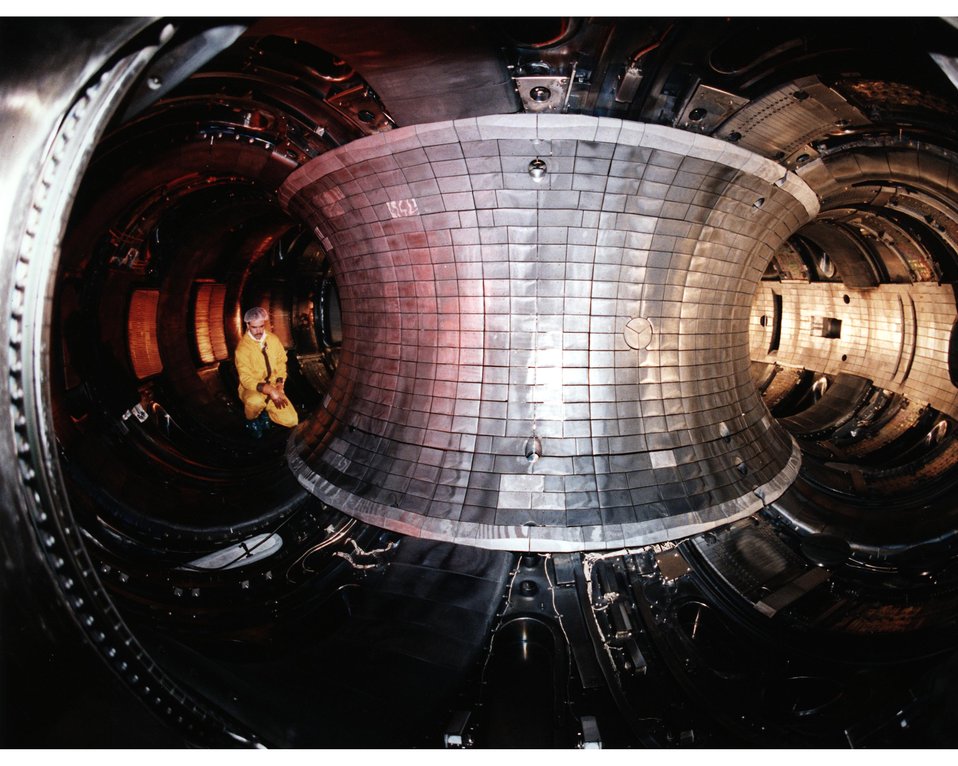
THE TOKAMAK FUSION TEST REACTOR (TFTR).

TFTR WILL BE 1ST FUSION EXPERIMENT TO USE TRITIUM, RADIO- ACTIVE ISOTOPE OF HYDROGEN. TRITIUM WILL BE STORED IN SOLID FORM IN 3 THICK-WALLED STEEL CYLINDERS WITHIN TRITIUM STORAGE & DELIVERY GLOVEBOX. WHEN NEEDED FOR MACHINE PULSE, TRITIUM GAS WILL BE GENERATED BY ELECTRICALLY HEATING SOLID TO A TEMPERATURE 300-400 DEGREES CENTIGRADE. VACUUM SYSTEM & TRITIUM SYSTEM WILL FUNCTION TOGETHER TO INJECT TRITIUM IN- TO TORUS TO CONDUCT EXPERIMENT& REMOVE WHEN EXPERIMENT OVER